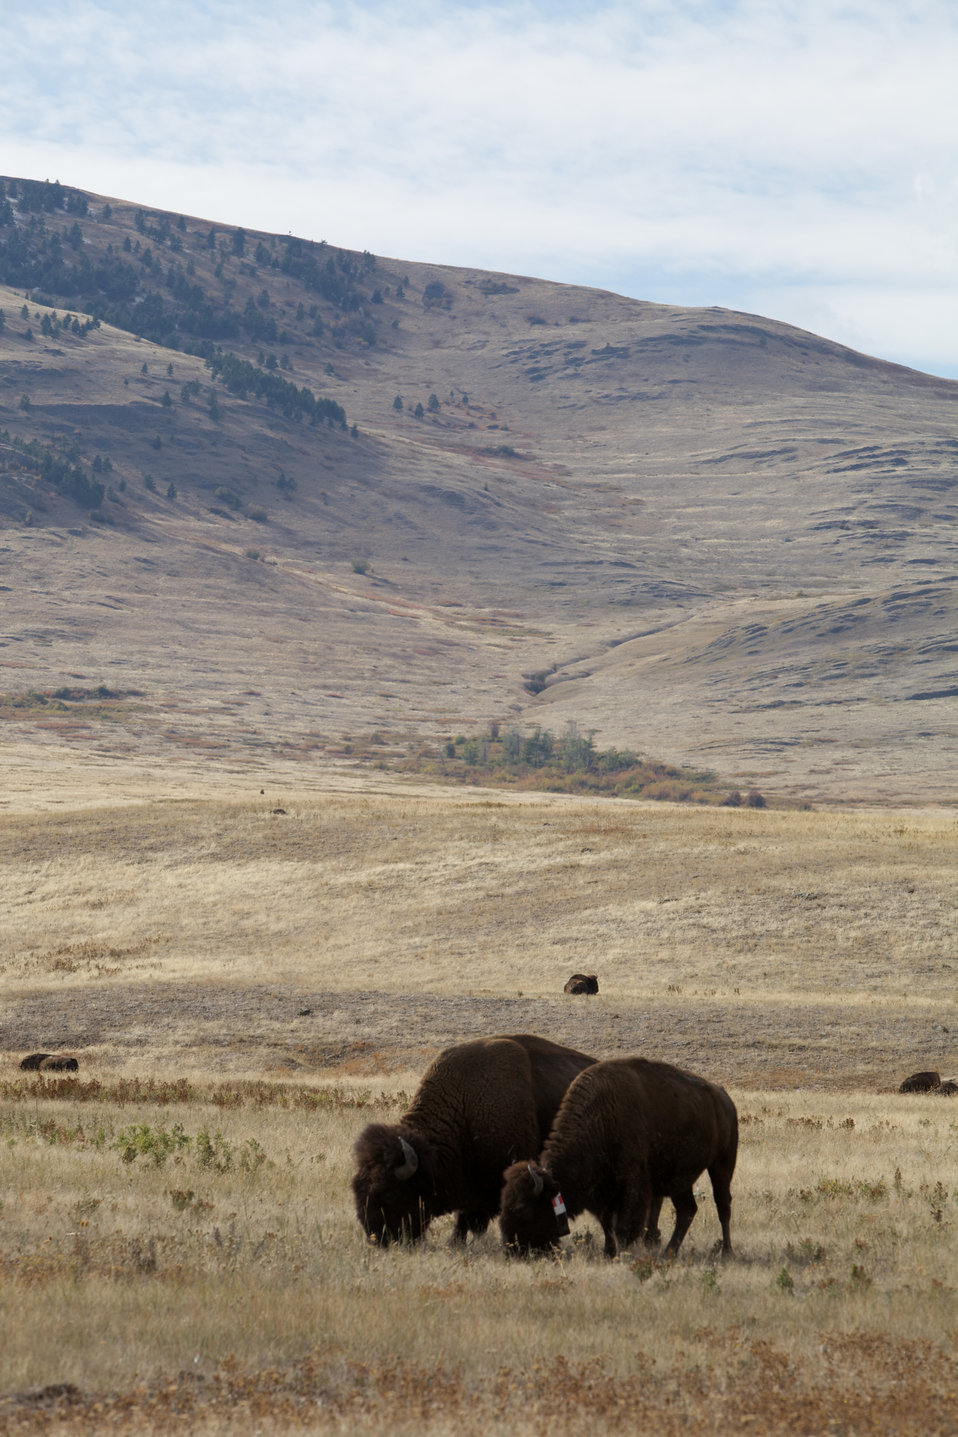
Bison Pair

A view of the scenic landscape and a bison pair grazing in a field at the National Bison Range.